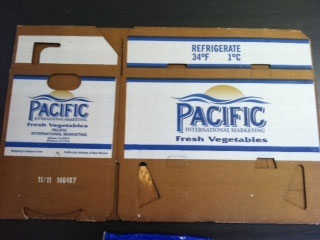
RECALLED - Cilantro

December 9, 2011 - Product Recall - Pacific International Marketing Voluntary Recalls Product Because of Possible Health Risk.